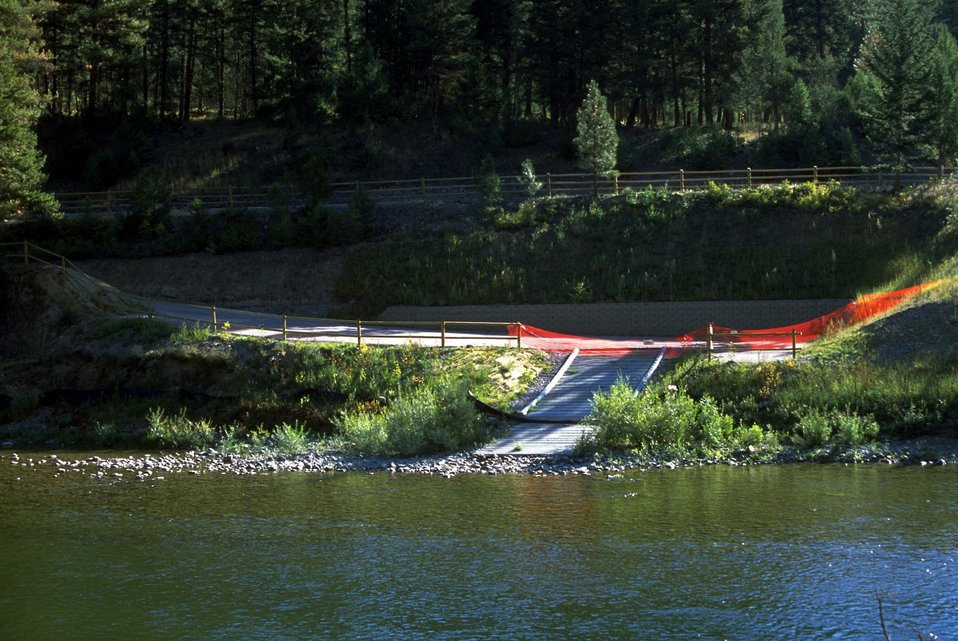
Boat launch at Whitaker Bridge on the Blackfoot River